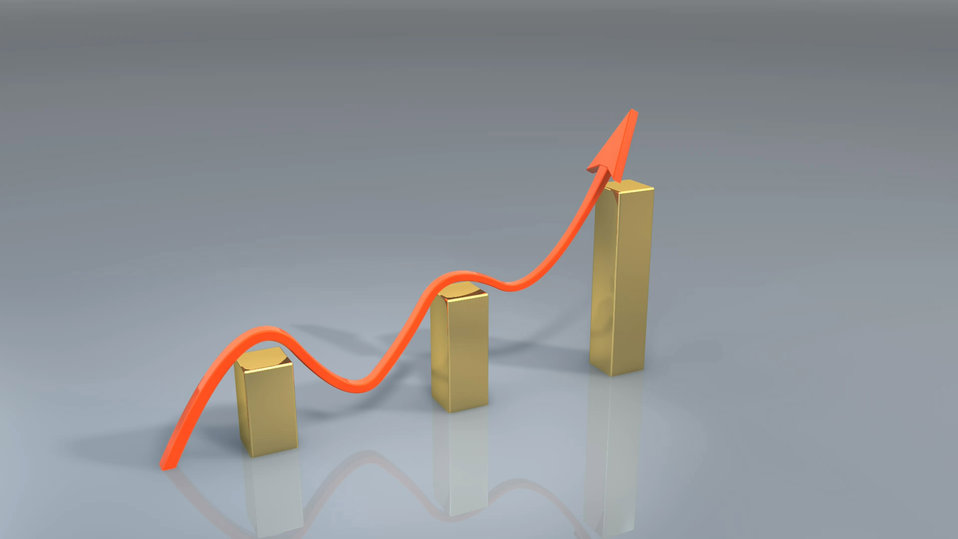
Chart success

Success in business.